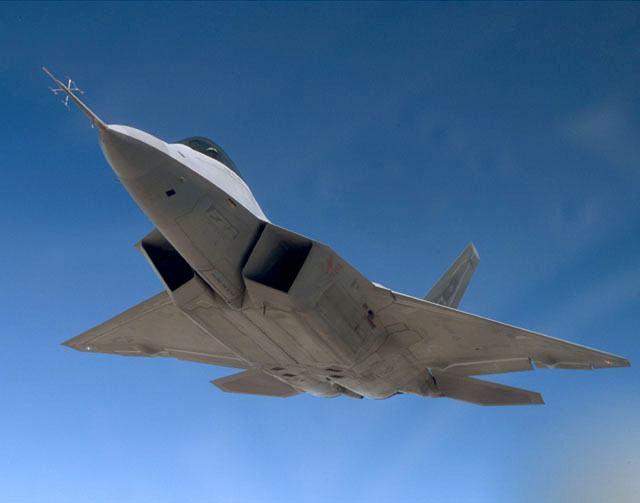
Raptor in flight

FILE PHOTO -- The F/A-22 is an air-superiority fighter with improved capability over current Air Force aircraft. From the inception of the battle, the F/A-22's primary objective will be to establish air superiority through the conduct of counter air operations. The F/A-22 also has an inherent air-to-surface capability. A combination of improved sensor capability, improved situational awareness, and improved weapons provides first-kill opportunity against the threat.